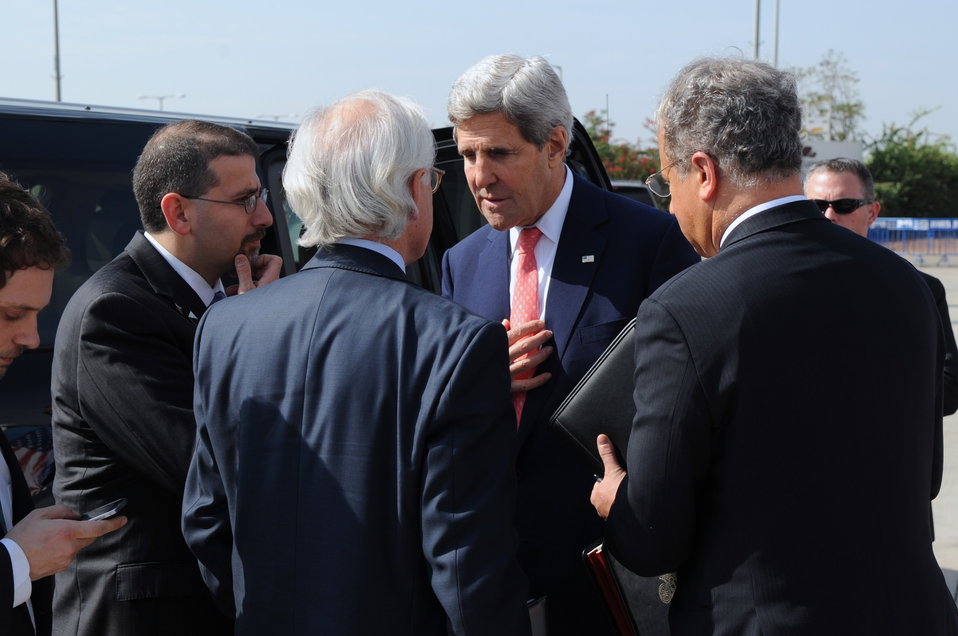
Secretary Kerry Speaks With Middle East Negotiators Before Departing Tel Aviv

U.S. Secretary of State John Kerry speaks with U.S. Ambassador to Israel Daniel Shapiro, U.S. Special Envoy for Israeli-Palestinian Negotiations Martin Indyk, and Deputy Special Envoy Frank Lowenstein about Middle East peace negotiations before departing Ben Gurion International Airport in Tel Aviv, Israel, en route to Geneva, Switzerland, on November 8, 2013.